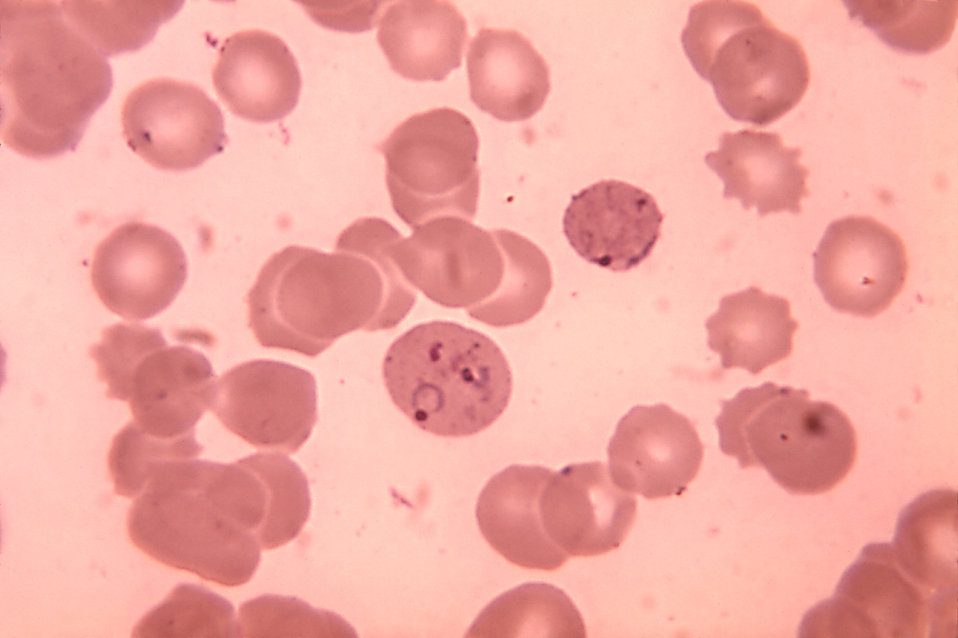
This blood smear micrograph revealed the presence of Plasmodium vivax ring stage parasites.